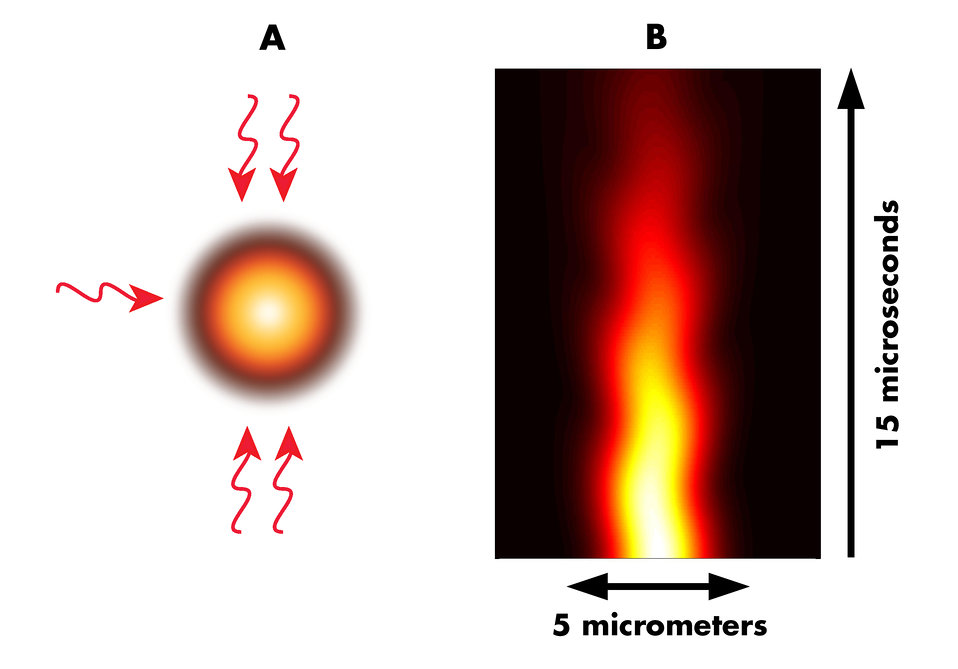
Ultracold atoms

A) Optical lattice of five laser beams trapping an atomic cloud. Color scale indicates cloud density: black is low, white high. B) Jittering motion of the atomic cloud in the optical lattice. The horizontal axis represents the spatial distribution of the cloud along one direction, while the vertical axis shows the variation of cloud density with time.